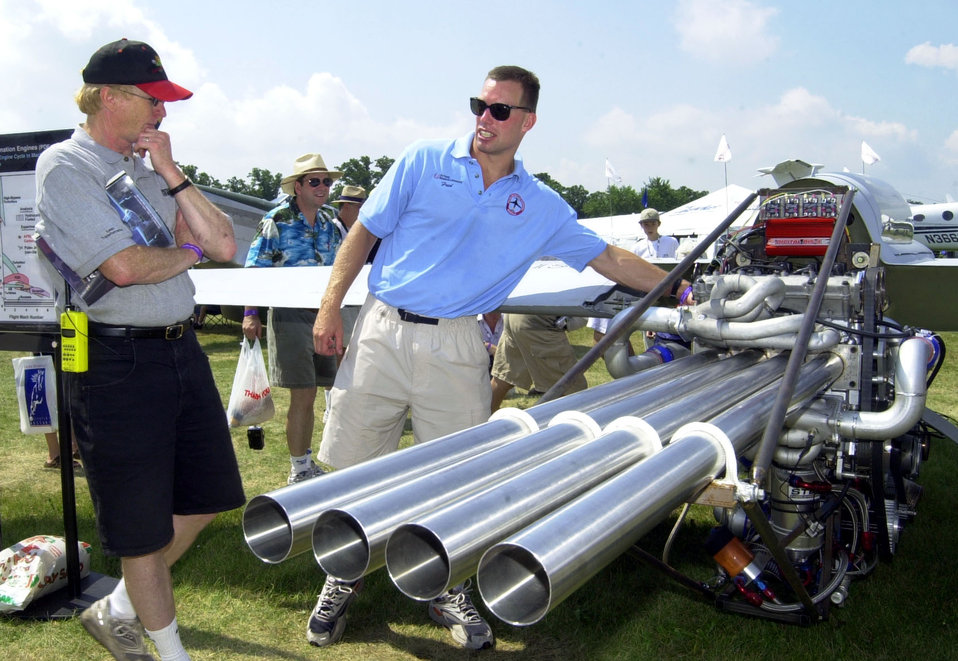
Now that's an engine

OSHKOSH, Wis. -- Dr. Fred Shauer talks to Experimental Aircraft Association's AirVenture visitors about the pulsed detonation engine the Air Force Research Laboratory from Wright-Patterson Air Force Base, Ohio, has on display. The engine is a test bed for future engines that will be capable of powering aircraft to speeds of up to Mach 4.